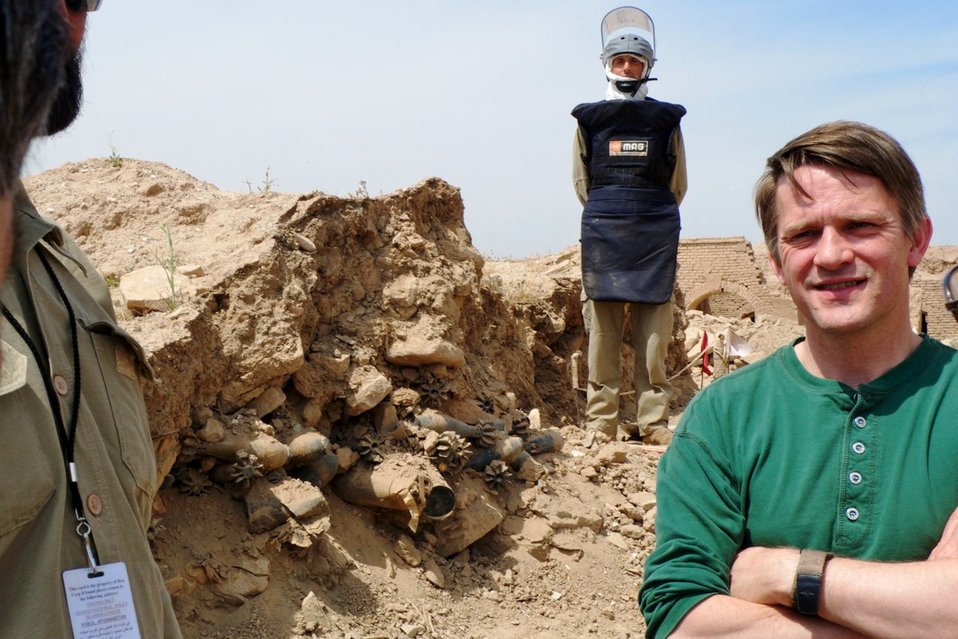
PDAS Countryman Removes Landmines in Afghanistan

Principal Deputy Assistant Secretary Thomas M. Countryman works to remove landmines in Afghanistan in May 2010.